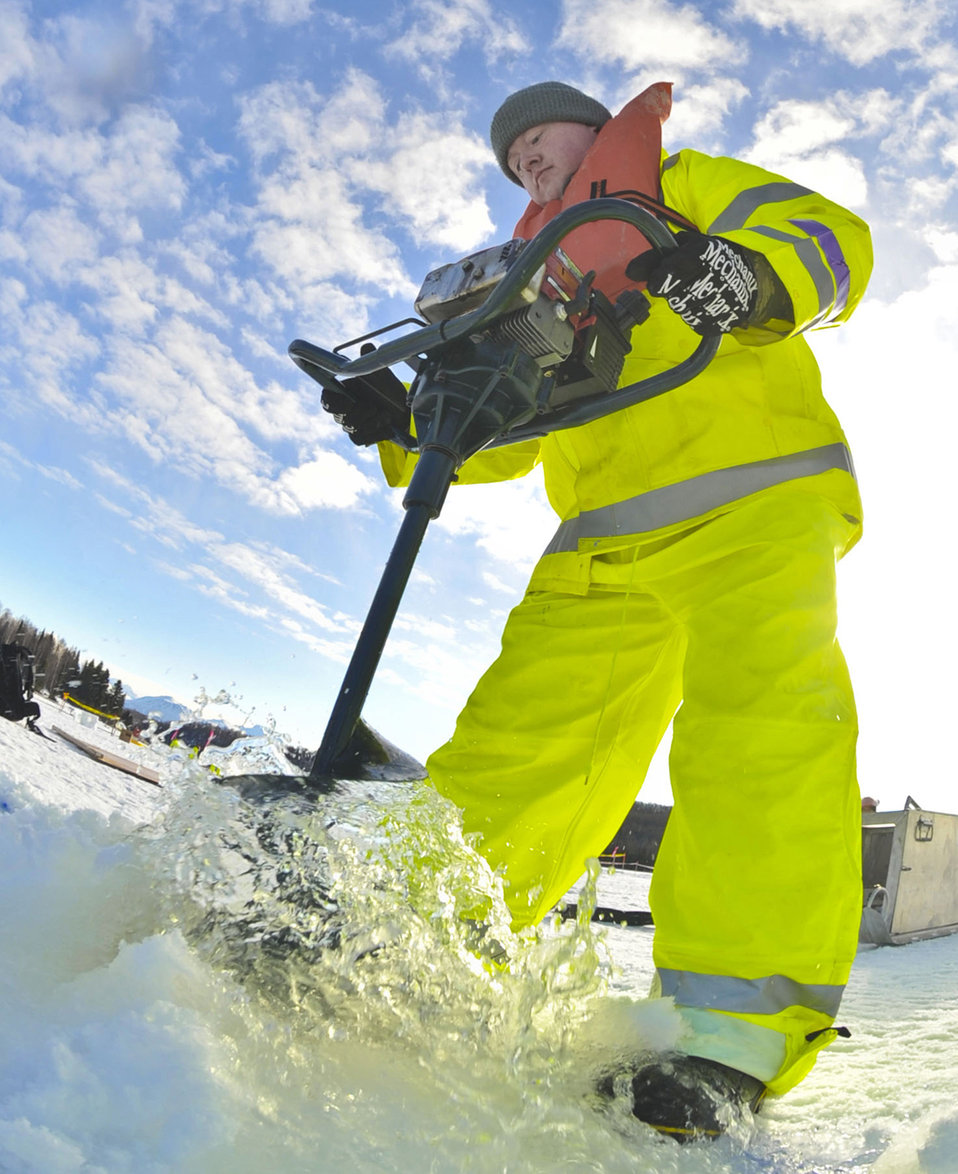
Environmental practice

Tech. Sgt. William Stewart drills through the ice with an auger Feb. 24, 2010, at Six-Mile Lake near Elmendorf Air Force Base, Alaska, during Ice Ops 2010. Airmen, Sailors and Coast Guardsmen practiced techniques designed for surface and under-ice spills. Sergeant Stewart is with the 611th CES.